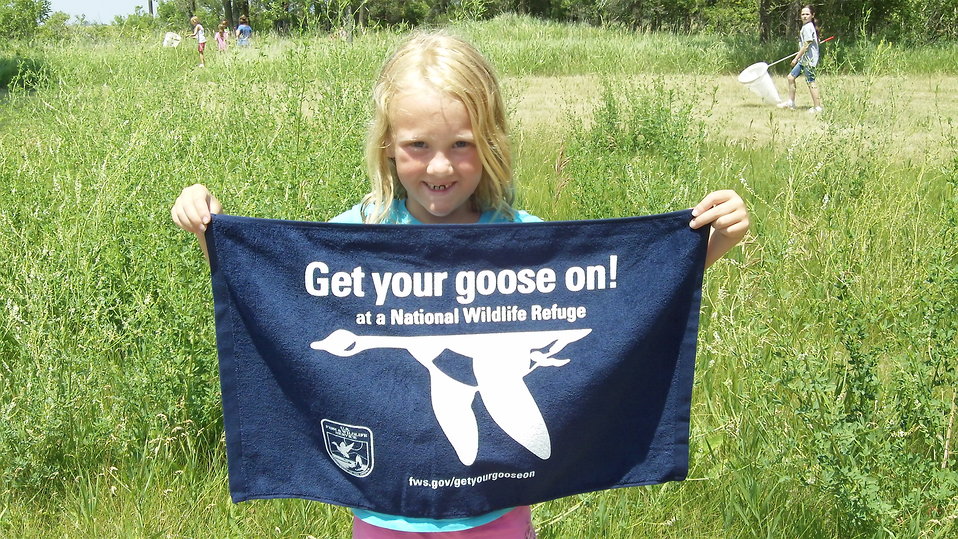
Get Your Goose On!

Photo taken at Huron Wetland Management District in east-central South Dakota.